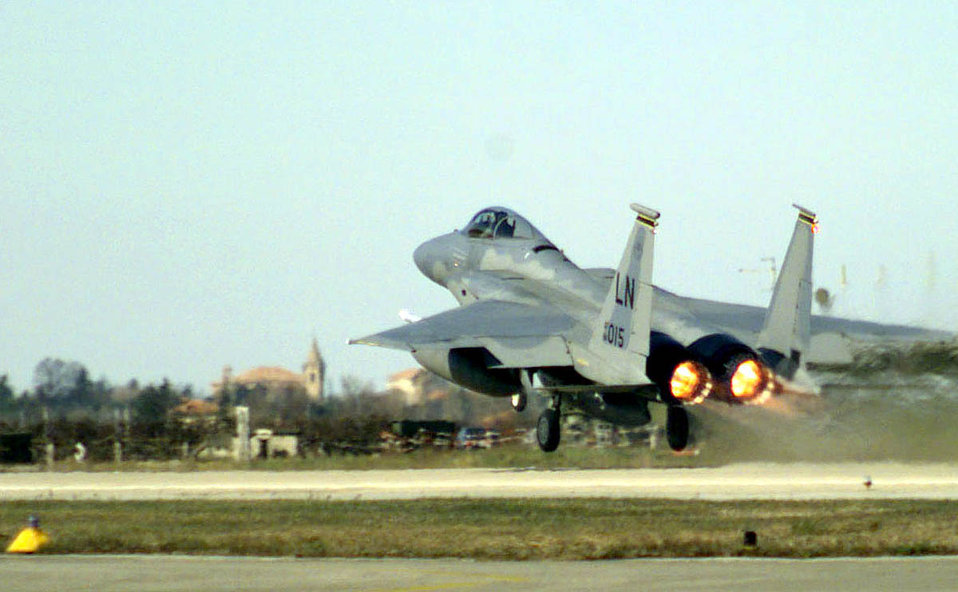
Airstrike

CERVIA AIR BASE, Italy -- An F-15 Eagle assigned to the 493rd Fighter Squadron, Royal Air Force, Lakenheath, England, takes-off from here. The 493rd FS deployed to Cervia to support airstrike operations in the former Republic of Yugoslavia.